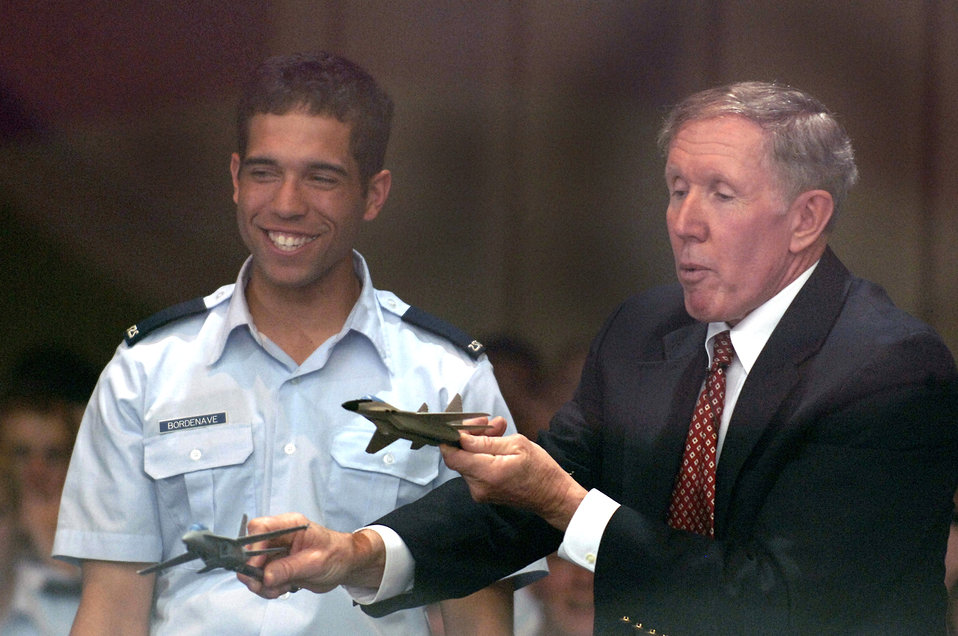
Life at the academy

Retired Navy Cmdr. William Driscoll demonstrates a dogfight to Cadet Christopher Bordenave during a motivational speech in Arnold Hall during the Academy Cadet Wing Unit Compliance Inspection in April at the U.S. Air Force Academy.